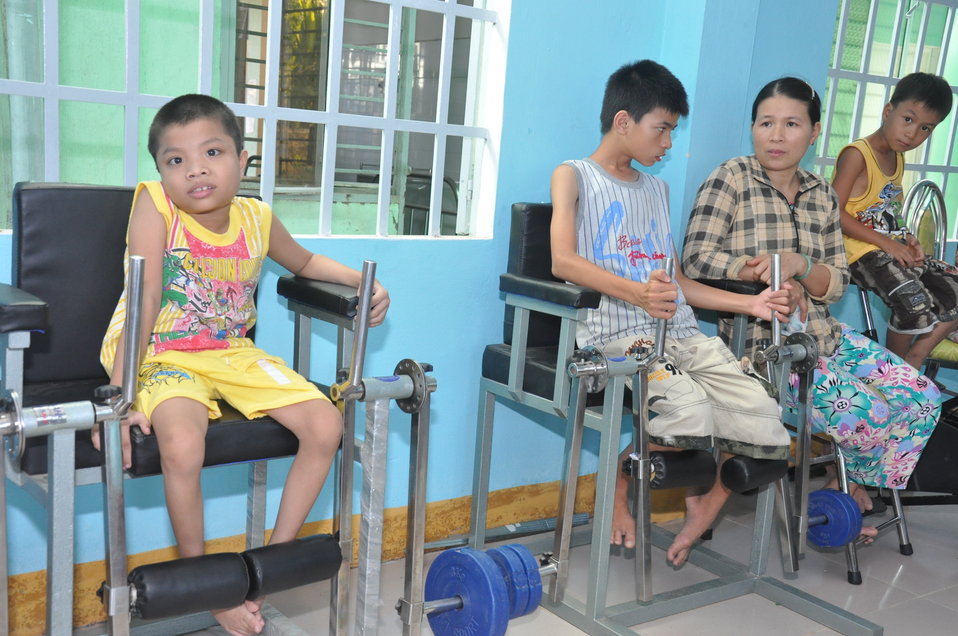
USAID Supports Persons with Disabilities in Danang

Danang, June 10, 2013.